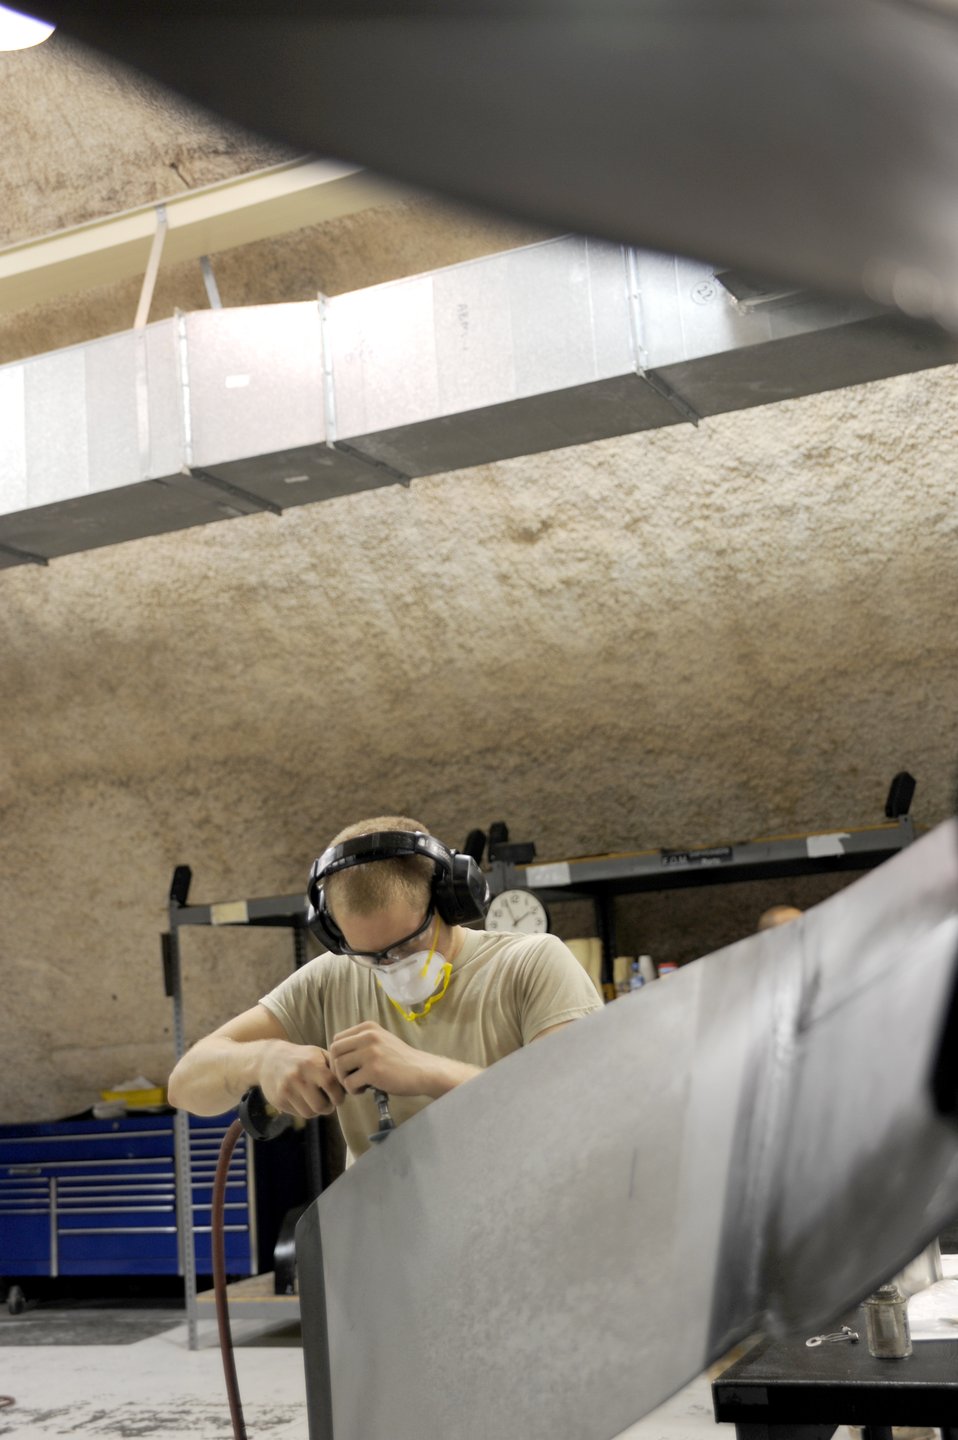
C-130 propeller blades

Senior Airman Corey Sites refinishes a C-130 Hercules propeller blade Aug. 30, 2010, at a base in Southwest Asia. Airman Sites is a jet engine mechanic with the 379th Expeditionary Maintenance Squadron and is deployed from Hurlburt Field, Fla.